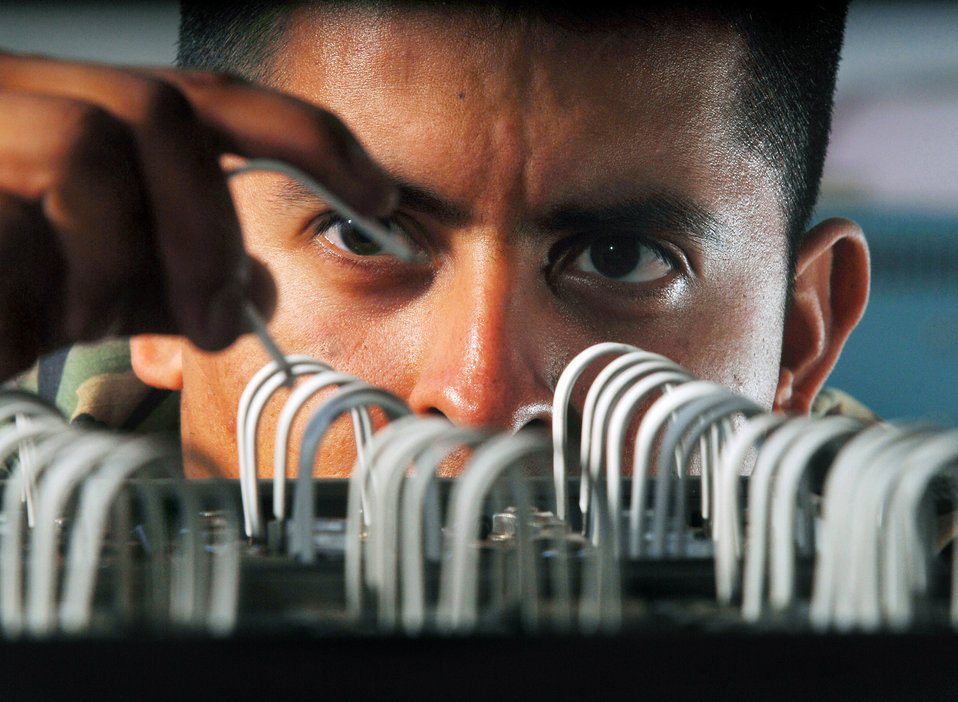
It's electrifying

Staff Sgt. Abraham Lagunas installs a shortening clip on a C-17 Globemaster III nickel-cadmium battery before reconditioning it Sept. 3 at March Air Reserve Base, Calif. The clips short out the battery cells to prevent electrical shock. Sgt. Lagunas is an aircraft mechanic with the 452nd Maintenance Squadron.